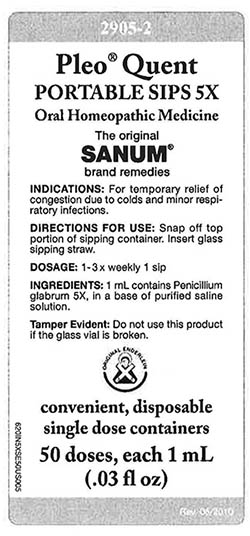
RECALLED – Homeopathic Drug Products

March 18, 2014 – Product Recall – Terra-Medica Issues Voluntary Nationwide Recall of Specified Lots of Pleo Homeopathic Drug Products Due to the Potential for Undeclared Penicillin.